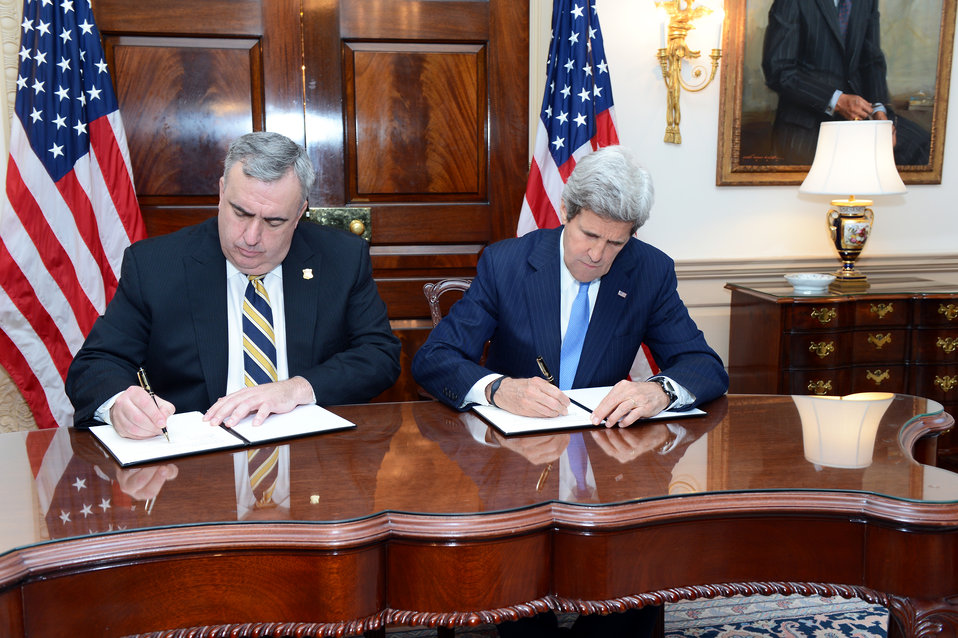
Secretary Kerry and Boston Police Commissioner Davis Sign a Memorandum of Understanding

U.S. Secretary of State John Kerry and Boston Police Commissioner Edward David sign a Memorandum of Understanding to increase cooperation aimed at building foreign law enforcement capacity at the U.S. Department of State in Washington, D.C., on May 13, 2013. The Boston Police Department has a long history of promoting partnerships in both the public and private sectors to reduce violence and strengthen public safety initiatives. Plans for this new partnership predate the marathon bombings in the Secretary's hometown.